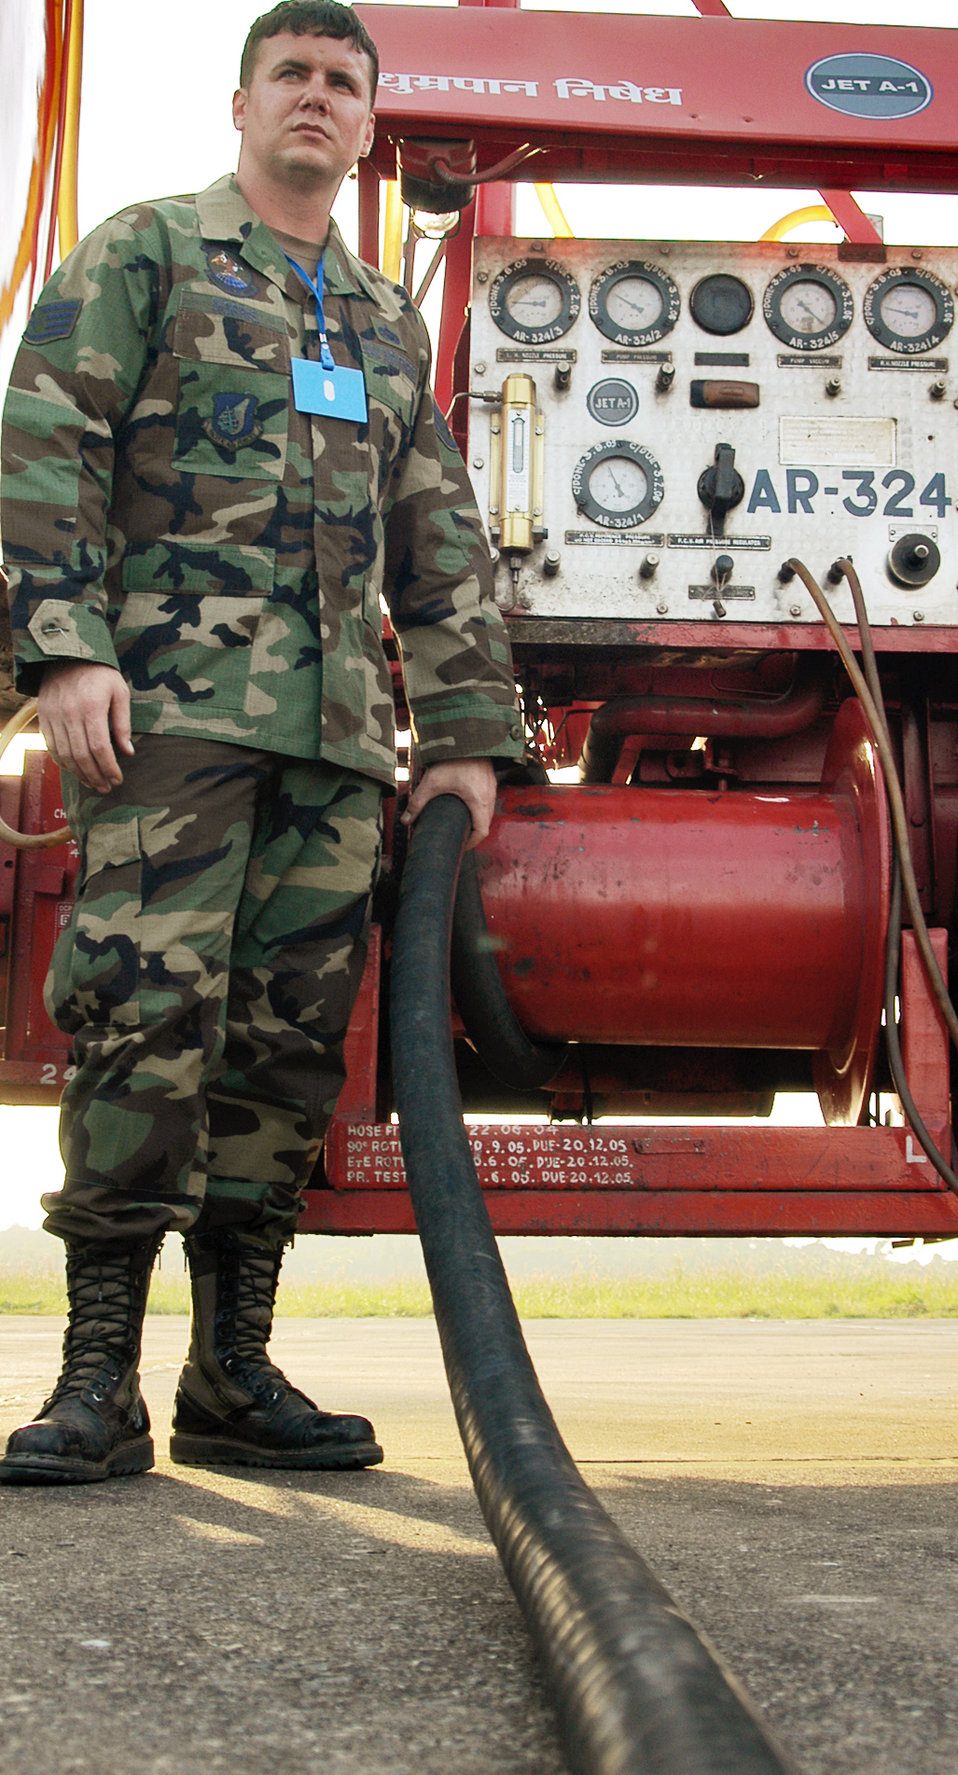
Cope India

KALAIKUNDA AIR STATION, India (AFPN) -- Staff Sgt. Trey Norris monitors the fueling of an F-16 Fighting Falcon during Cope India 2006. During the exercise, Sergeant Norris has worked closely with the Indian Oil Company to completing 146 aircraft refuels -- nearly 235,000 gallons of fuel. Sergeant Norris is a fuels distribution supervisor from the 374th Logistics Readiness Squadron at Yokota Air Base, Japan.